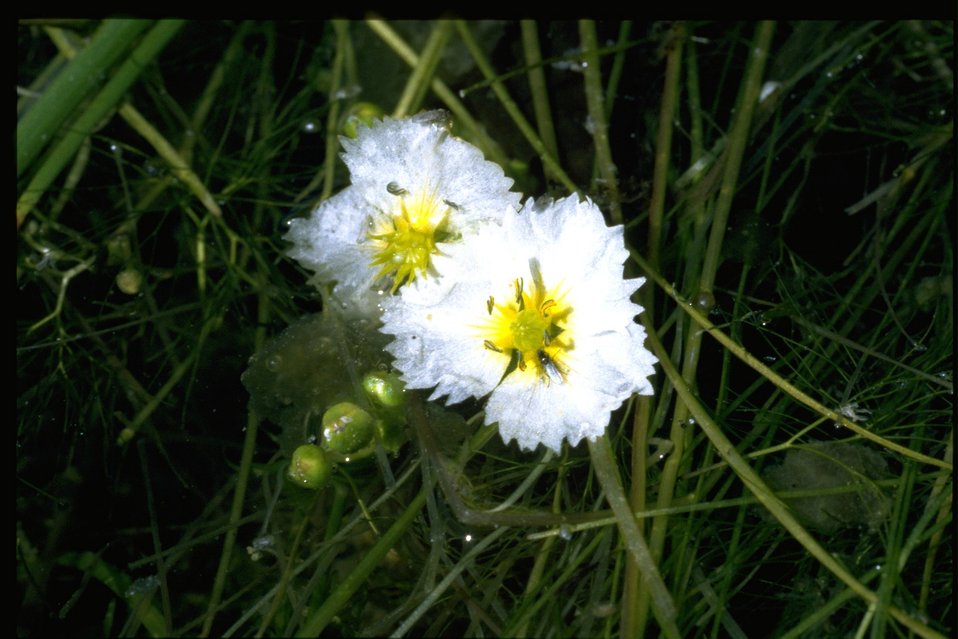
Medium shot of Fringed Water Plantain.